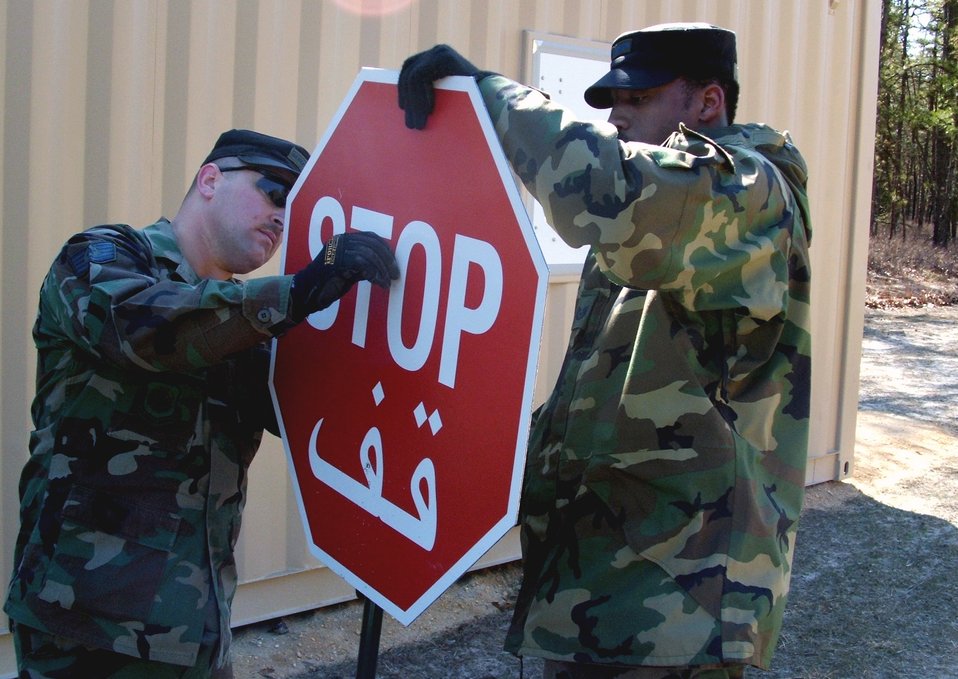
Exercise Eagle Flag 06-2

Tech. Sgts. Norman Williams and Bernard Wilson assemble a stop sign for the village at Naval Air Engineering Station Lakehurst, N.Y., in preparation for Exercise Eagle Flag 06-2 Wednesday, March 1, 2006. The village, known as